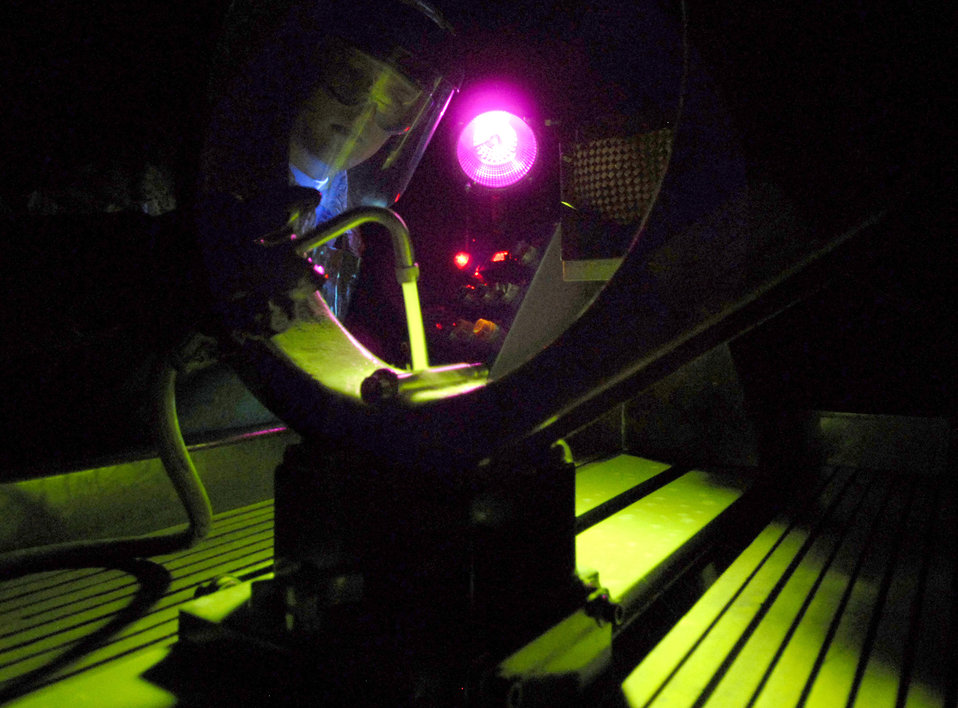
Hunting for hidden damage

Senior Airman Tyler Koonst applies a magnetic particle bath to a bolt from a main landing wheel in order to search for cracks or defects May 14 at an air base in Southwest Asia. The non-destructive inspection team inspects aircraft parts for defects or damage. Airman Koonst is assigned to the 379th Expeditionary Maintenance Squadron. He is from Belle Plaine, Minn. and is deployed from the 934th Airlift Wing at Minneapolis-St. Paul Air Reserve Station, Minn.